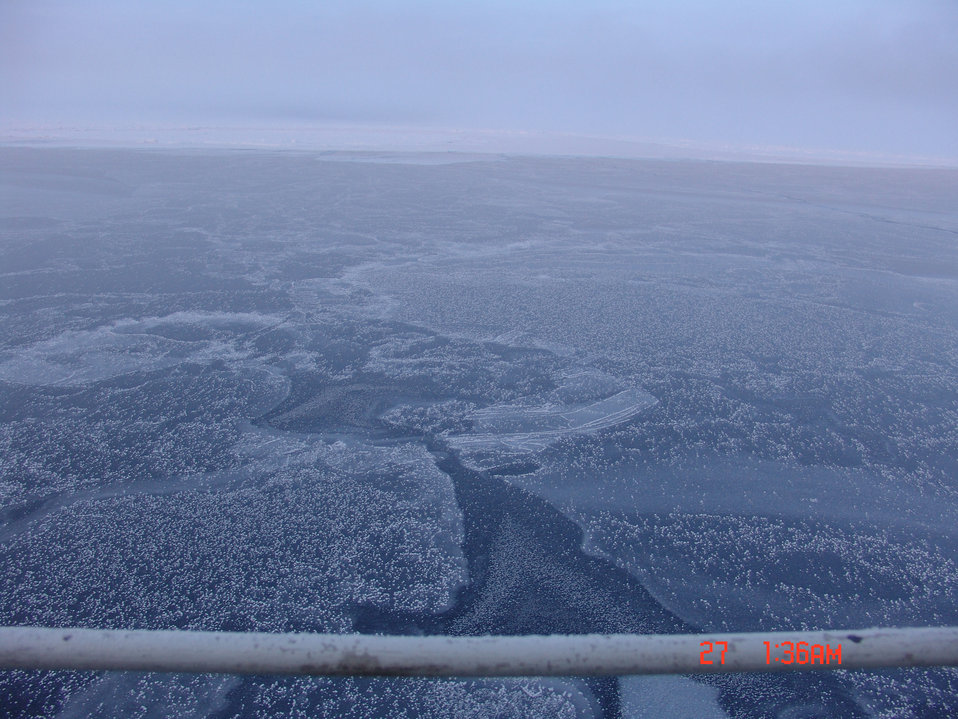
Nilas ice covered with frost flowers with the ice pack extending to the horizon.